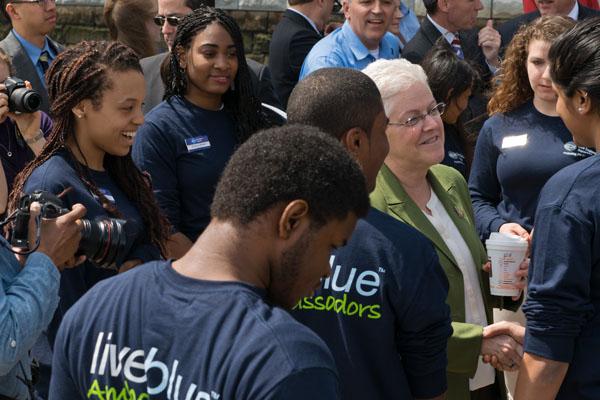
Day in the Life - Earth Day, April 22, 2014

12:01 pm – Saying hello to Climateens, a group of young adults engaged in the issue of climate change sponsored by the New England Aquarium. (4/12)